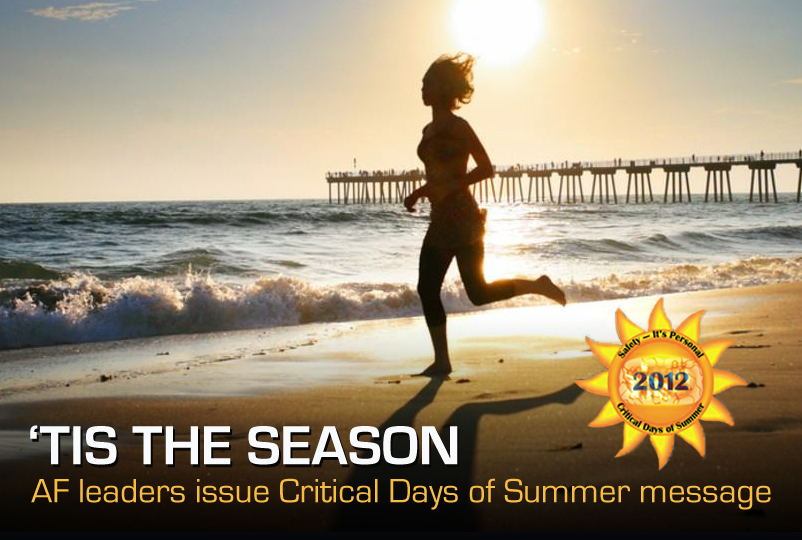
'Tis The Season